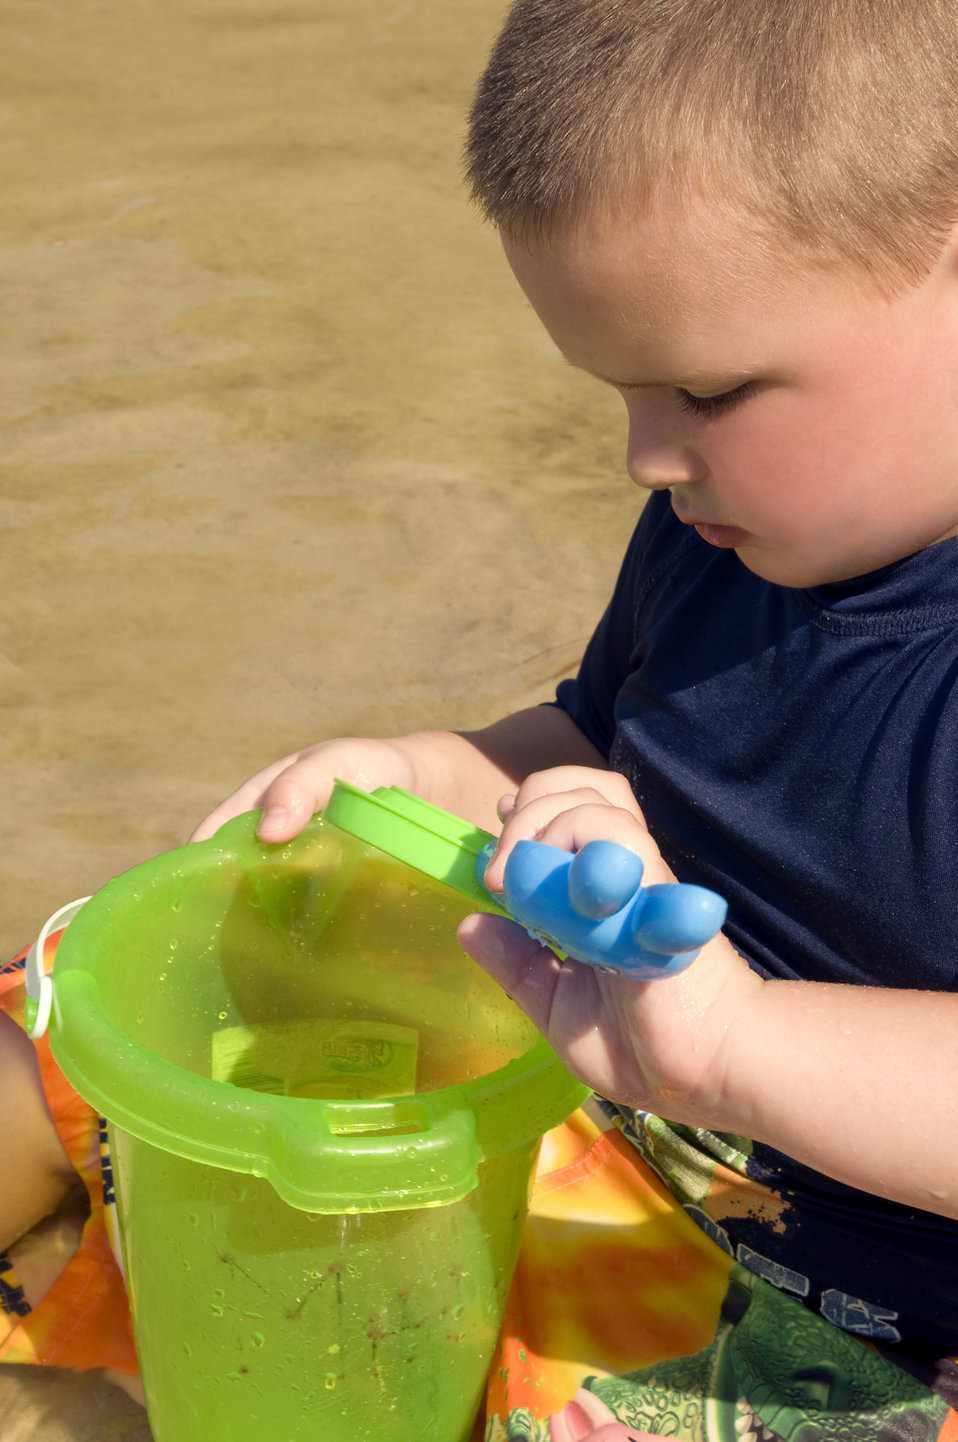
This young boy was seated at the water's edge holding a toy bucket with his right hand, and a plastic strainer with his left. Sunscreen had been applied to his minimally-exposed skin, and he was wearing a darkly-colored shirt in order to prevent overexposure to the sun's harmful ultraviolet rays.